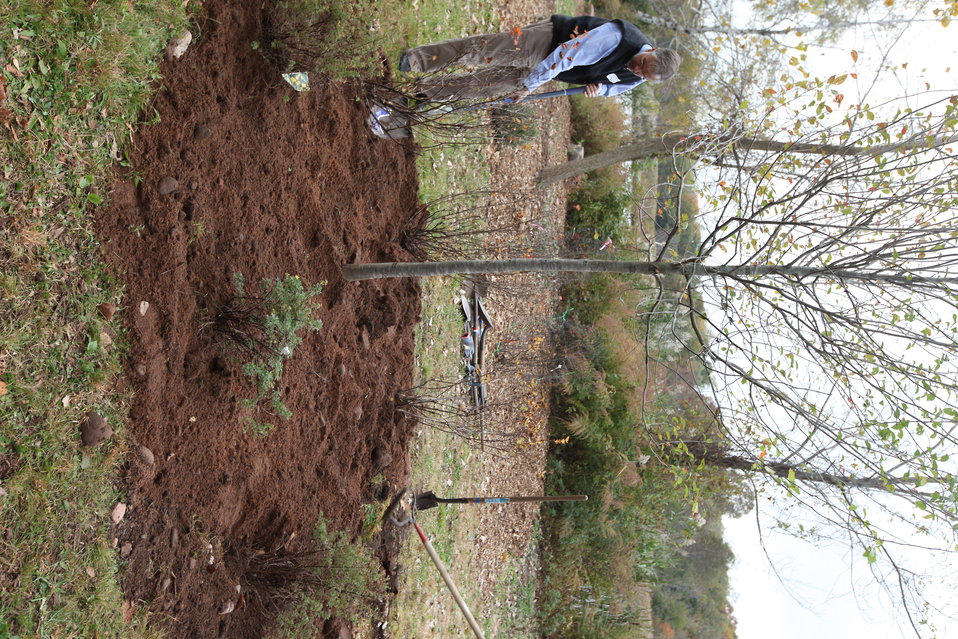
After the tree planting

The finished product after the student tree planting.